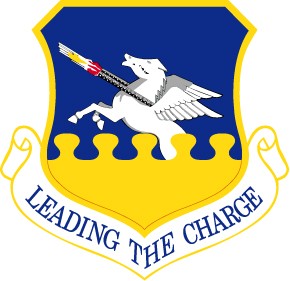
51st Fighter Wing shield